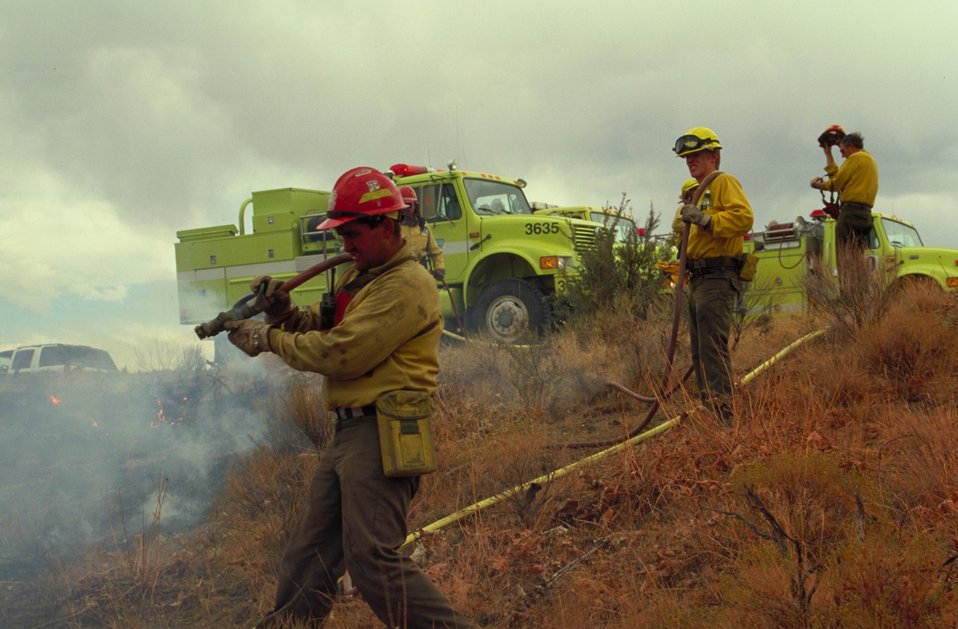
Heavy engine Prescribed burn Fire Season 2000 Lower Snake River District LSRD